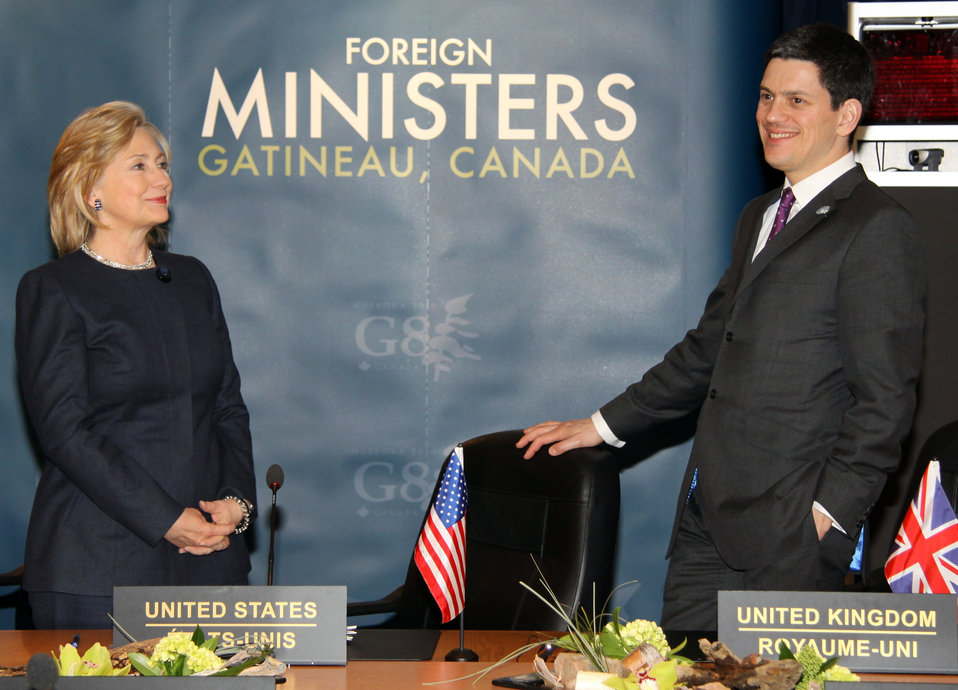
Secretary Clinton Meets With U.K. Foreign Minister

U.S. Secretary of State Hillary Rodham Clinton meets with U.K. Foreign Minister David Miliband during the G8 Foreign Ministers Meeting in Ottawa, Canada March 29, 2010.